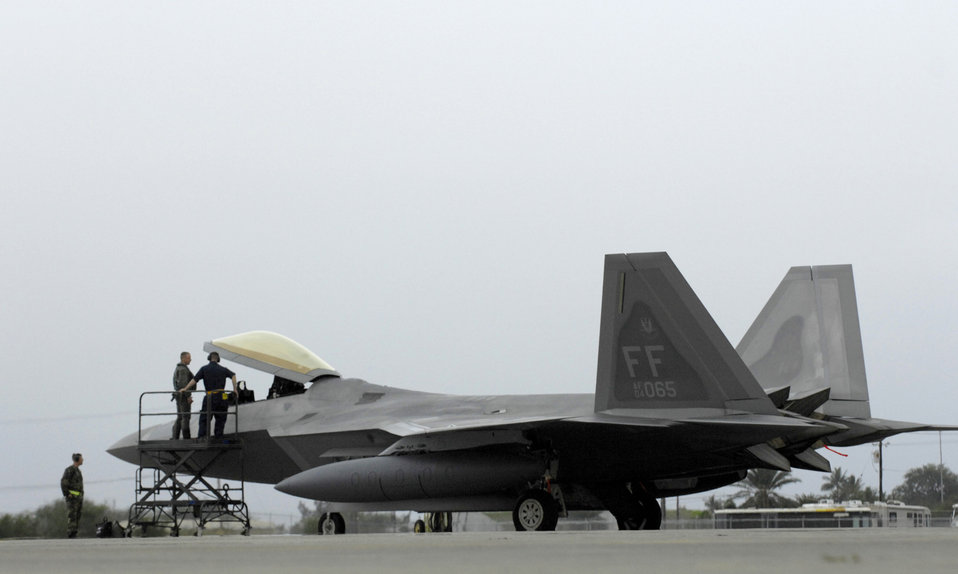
F-22 begins first overseas deployment

A crew chief talks to the pilot of an F-22 Raptor after parking Feb. 7 at Hickam Air Force Base, Hawaii. The F-22s and more than 250 Airmen from the 27th Fighter Squadron at Langley Air Force Base, Va., are bound for Kadena Air Base, Japan, for the aircraft's first overseas operational deployment.